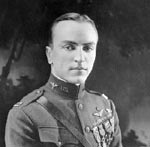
Captain Eddie Rickenbacker

EARLY YEARS -- Edward Vernon Rickenbacker was the American